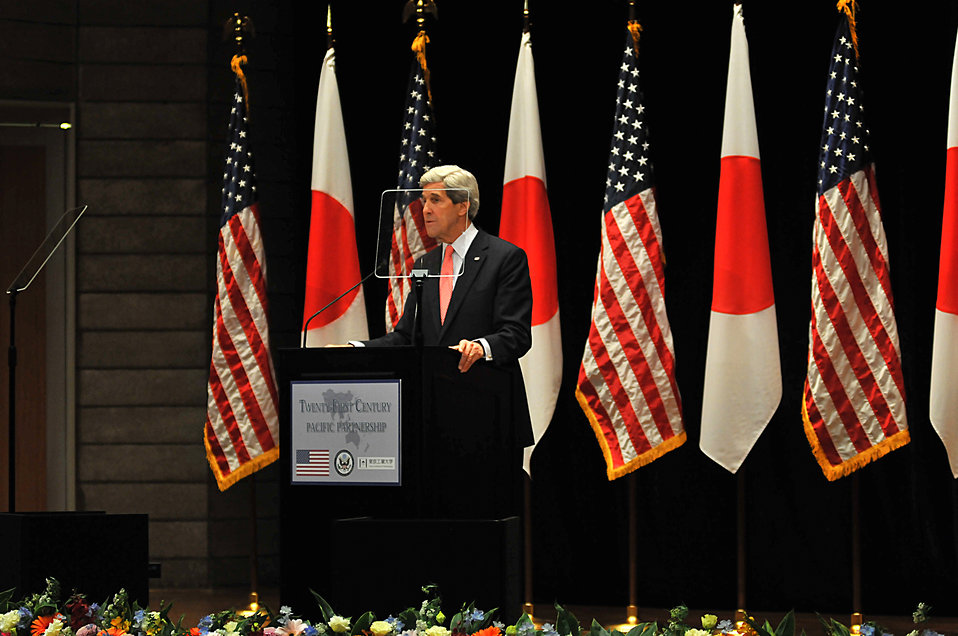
Secretary Kerry Speaks at Tokyo Institute of Technology

U.S. Secretary of State John Kerry delivers a speech about U.S.-Pacific relations at the Tokyo Institute of Technology in Tokyo, Japan, on April 15, 2013.